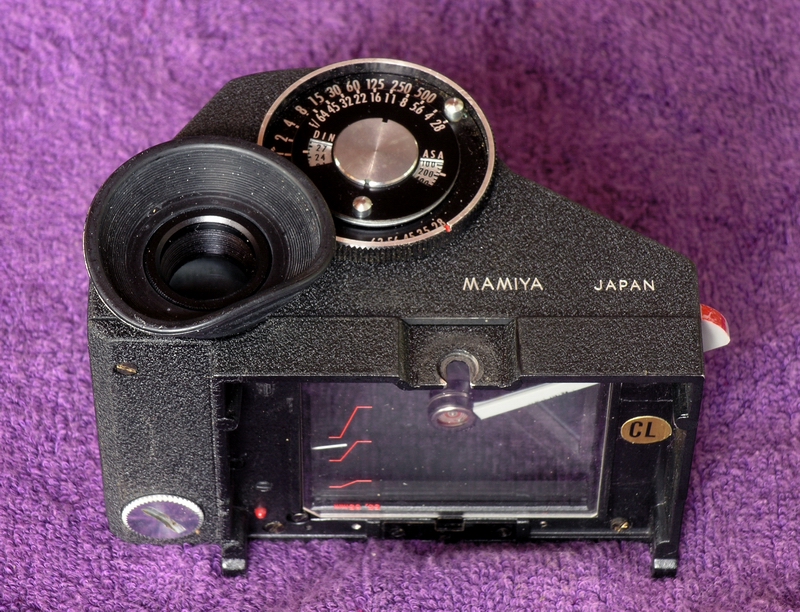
DANYvanvee